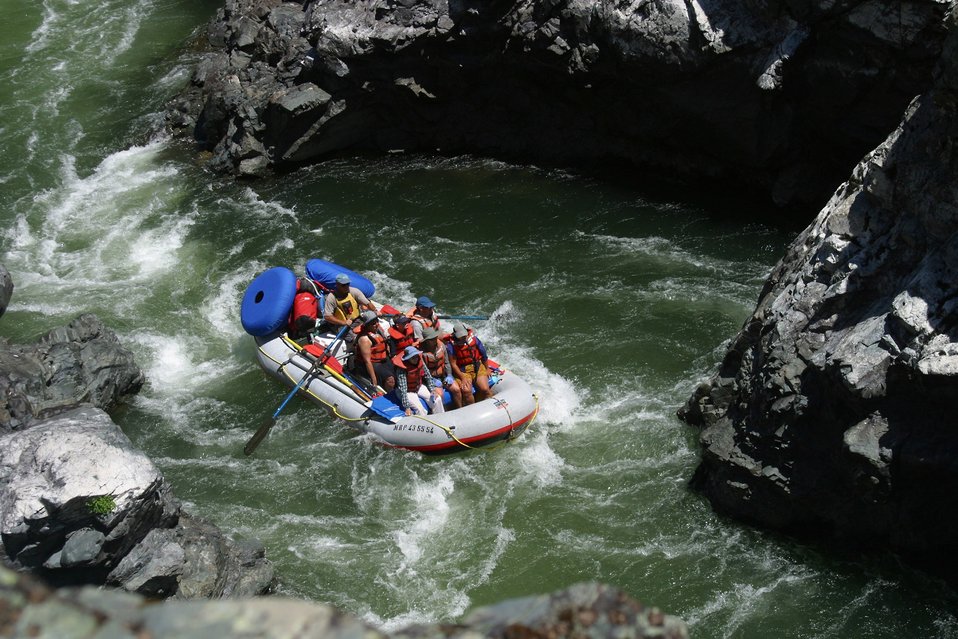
The Coffee Pot